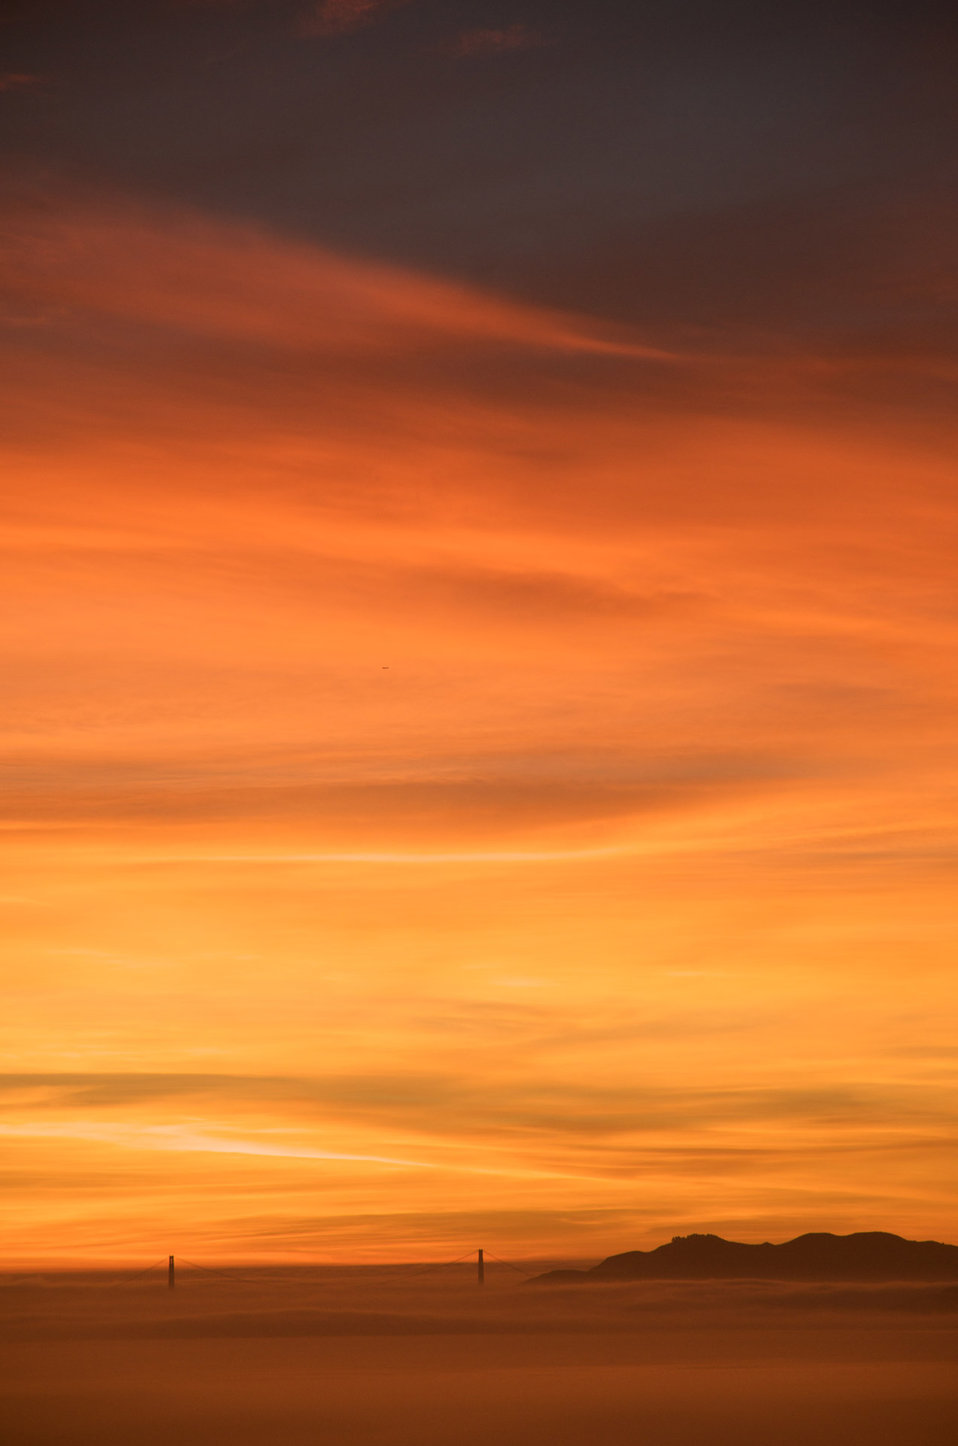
San francisco bay

Sunset san francisco.